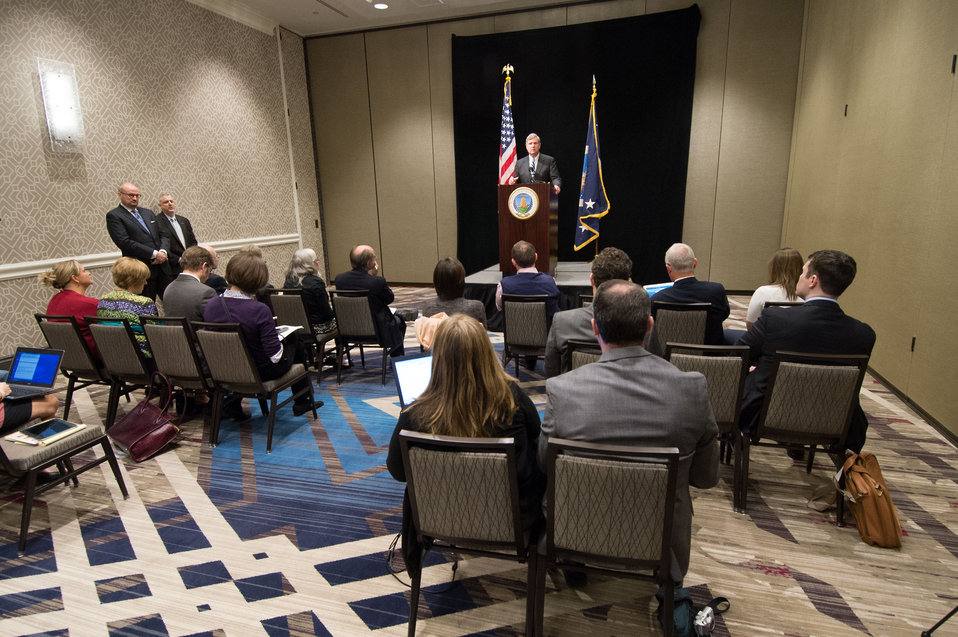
Agriculture Secretary Tom Vilsack makes remarks to the press at the 2014 Agricultural Outlook Forum on Thursday, Feb. 20, 2014 in Arlington, VA. The U.S. Department of Agriculture's (USDA) annual Agricultural Outlook Forum brings together the agricultural community to discuss policy, trade, science, rural development, and the economic outlook for the coming year. The Forum also focuses on forestry, health and nutrition issues, and the changing dynamics and face of rural America.